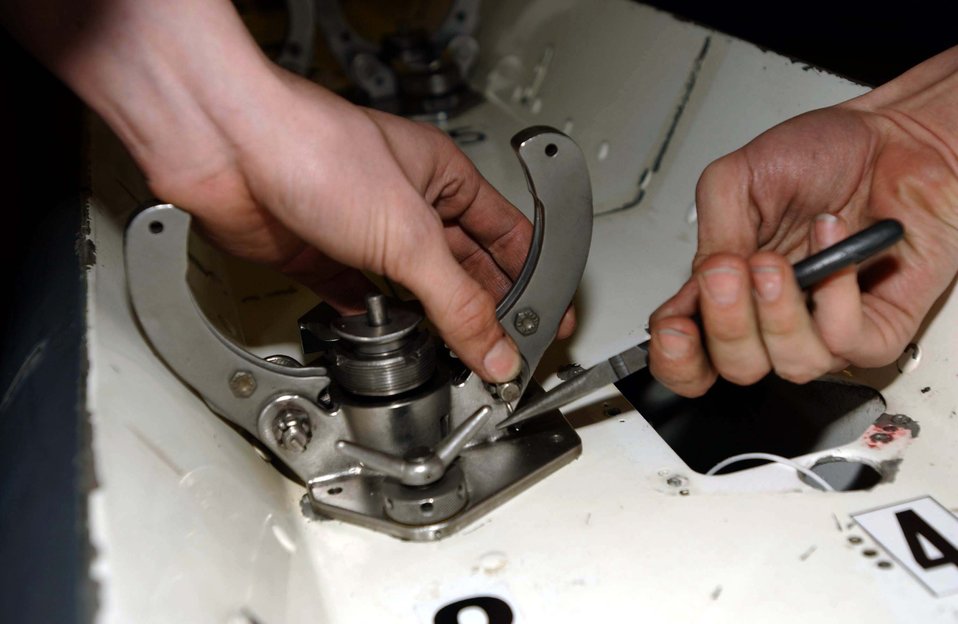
Ejector removal

ROYAL AIR FORCE LAKENHEATH, England -- Airman 1st Class Trevor Delasaux removes an ejector from a SUU-20 missile launcher housing here April 7. Airman Delasaux is an armament systems journeyman with the 48th Munitions Squadron.